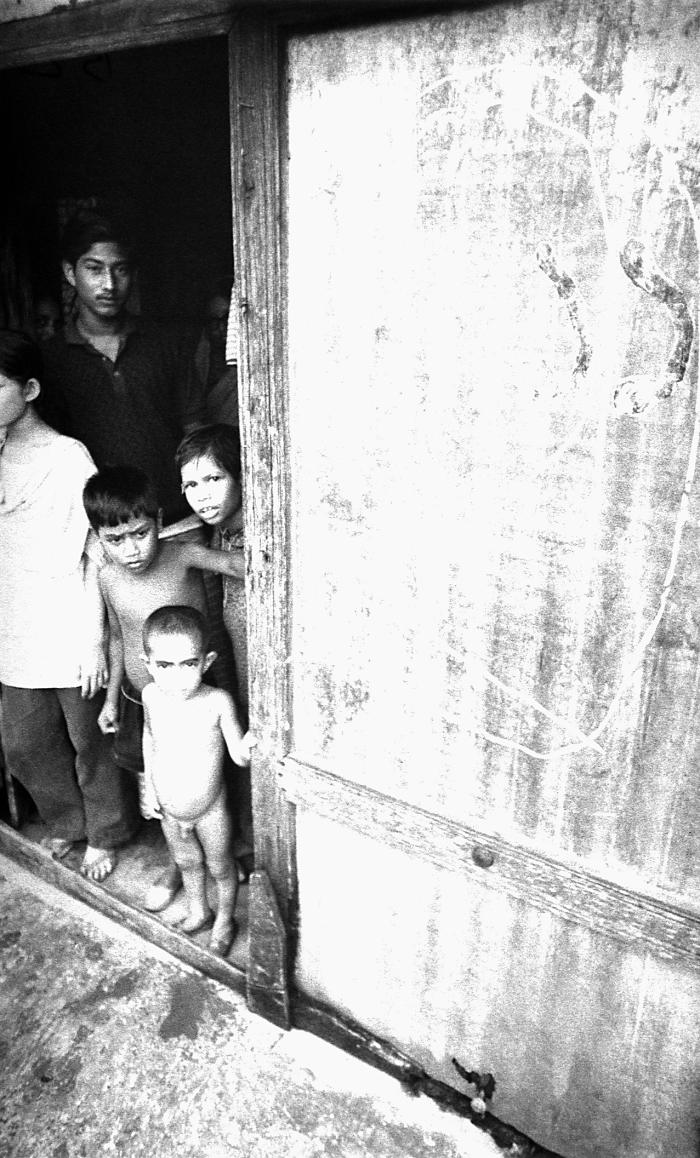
This 1975 photograph depicted a group of children standing in the doorway of a typical Bangladesh village home. It was captured as a local smallpox eradication team member was making the rounds from house to house with his cache of smallpox eradication paraphernalia, which consisted of the requisite leaflets describing the disease, an announcement of the reward associated with reporting suspected smallpox cases to the appropriate health officials, and a photograph, which he'd show the villagers showing a child's face displaying the classic maculopapular smallpox rash.